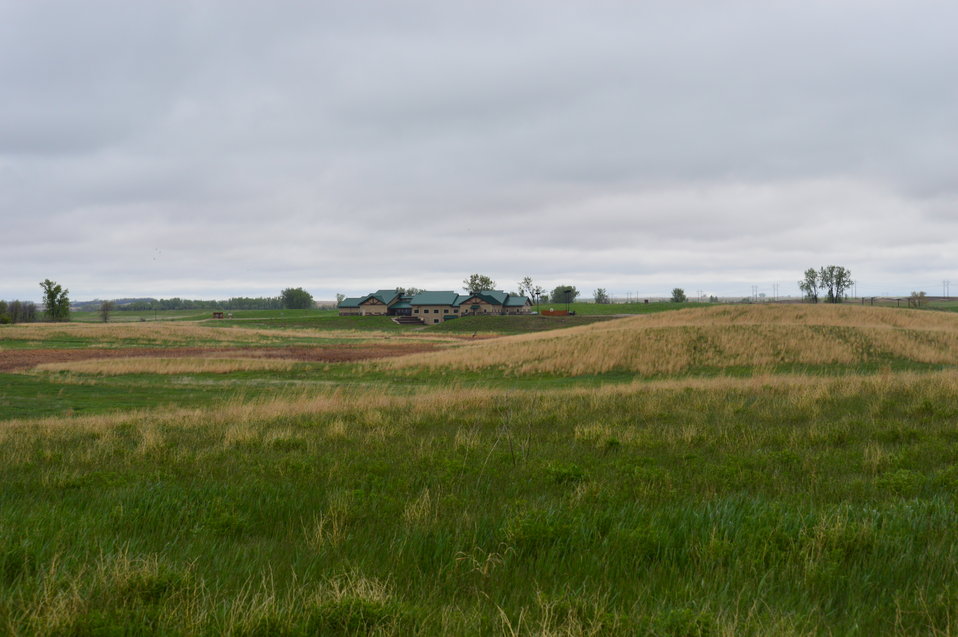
Prairie Landscape

Scenery and wildlife and Audubon National Wildlife Refuge in North Dakota.